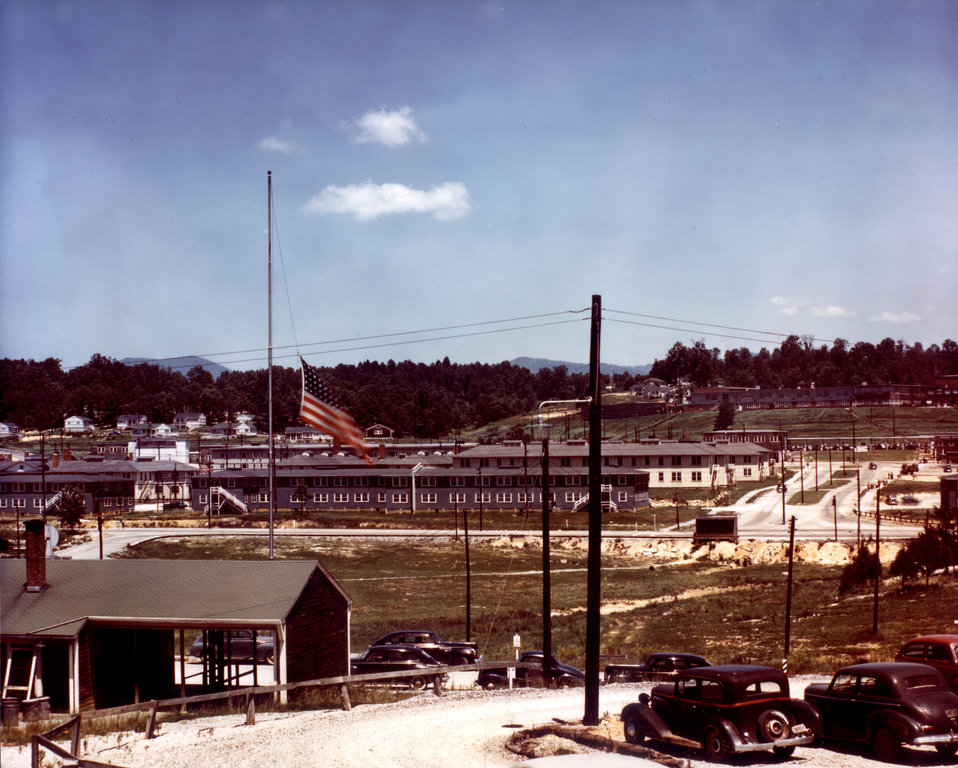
Oak Ridge Turnpike, 1944.

med163a DOE Photo by Ed Westcott

Oak Ridge Turnpike Oak Ridge Tennessee 1944.